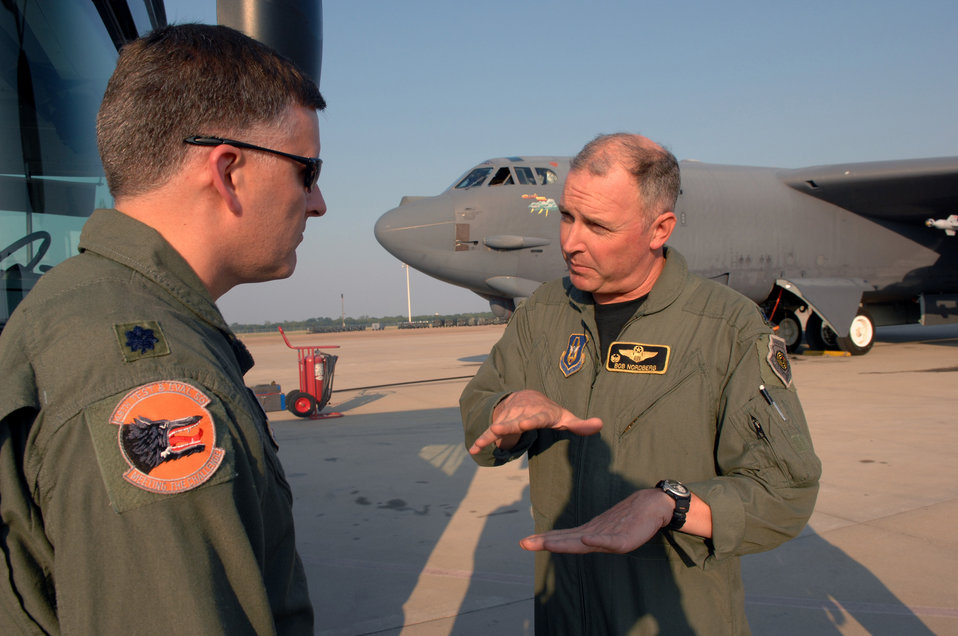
Barksdale Airmen recreate history

Lt. Col. Robert Norberg discusses mission details with Lt. Col. Kelly Lawson. Colonel Norberb is the 93d Bomb Squadron Aircraft commander who flew one of three 2nd Bomb Wing B-52H Stratofortress during a maritime intercept training mission, Aug 24. Colonel Lawson is the 49th Test Squadron commander.